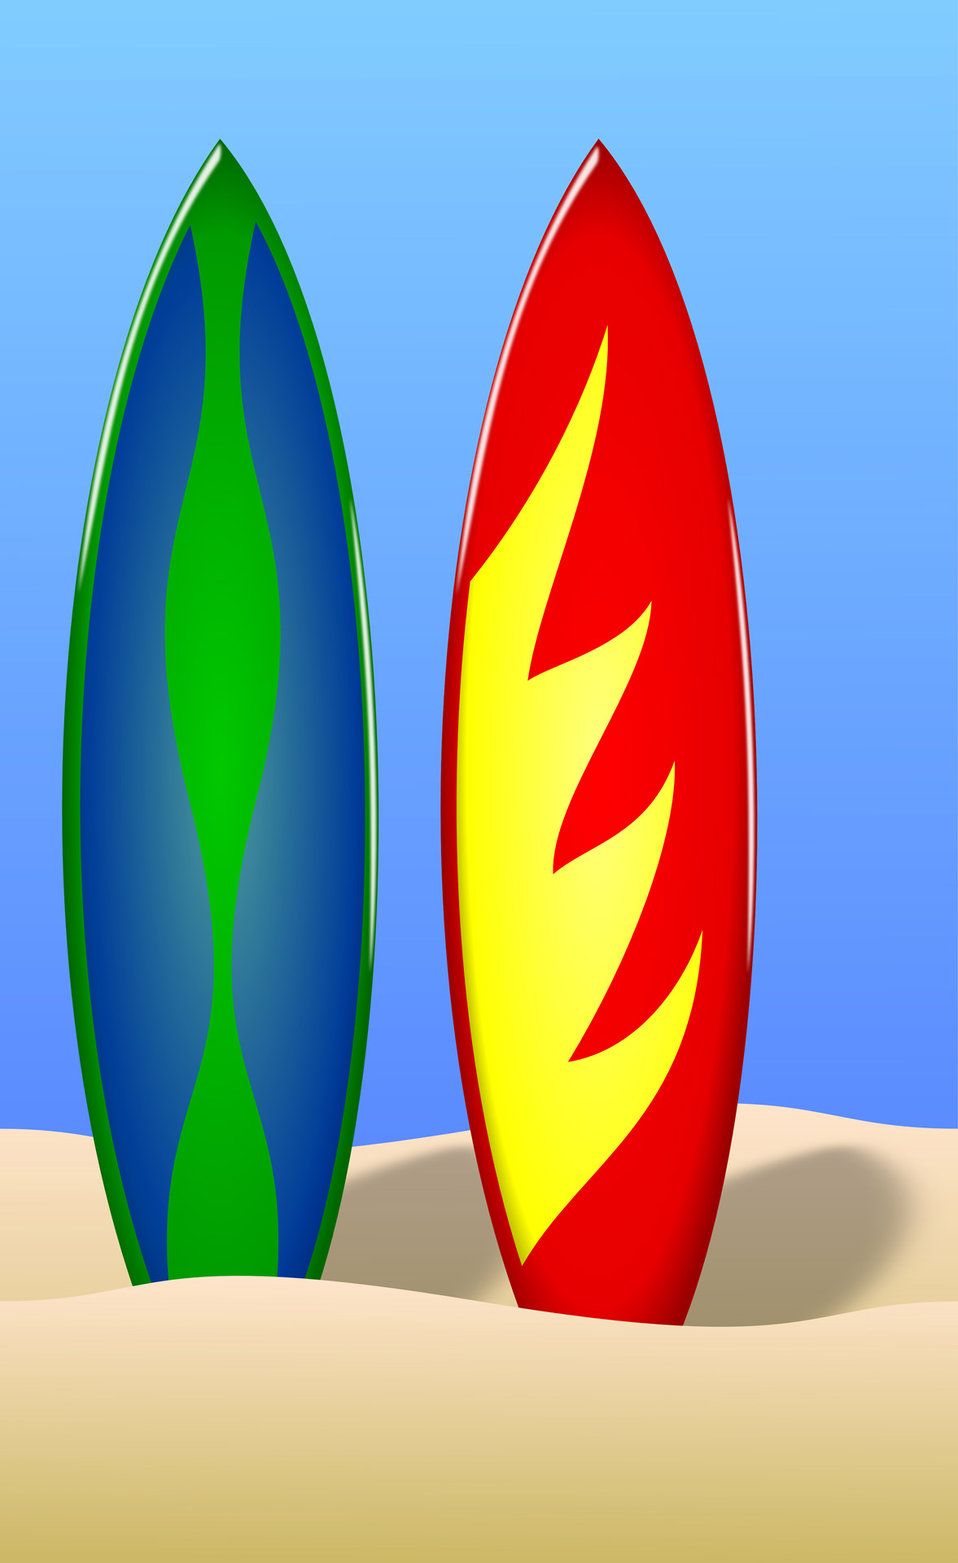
Surfboards

A pair of surfboards on the beach sand..